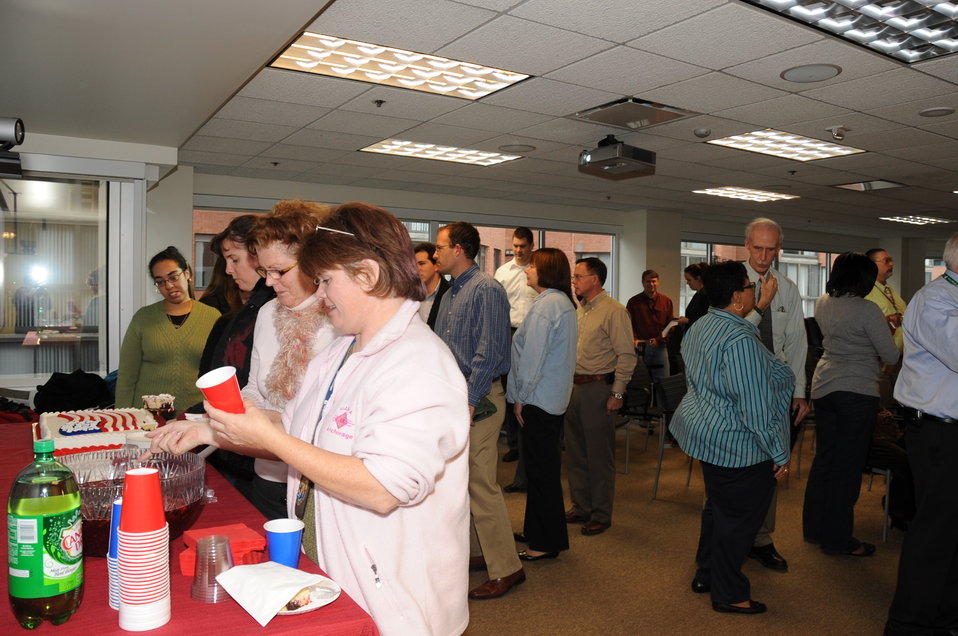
Honoring and Celebrating our Veterans

11.07.2012 Employees gathered in the Arlington Office to honor FWS Veterans